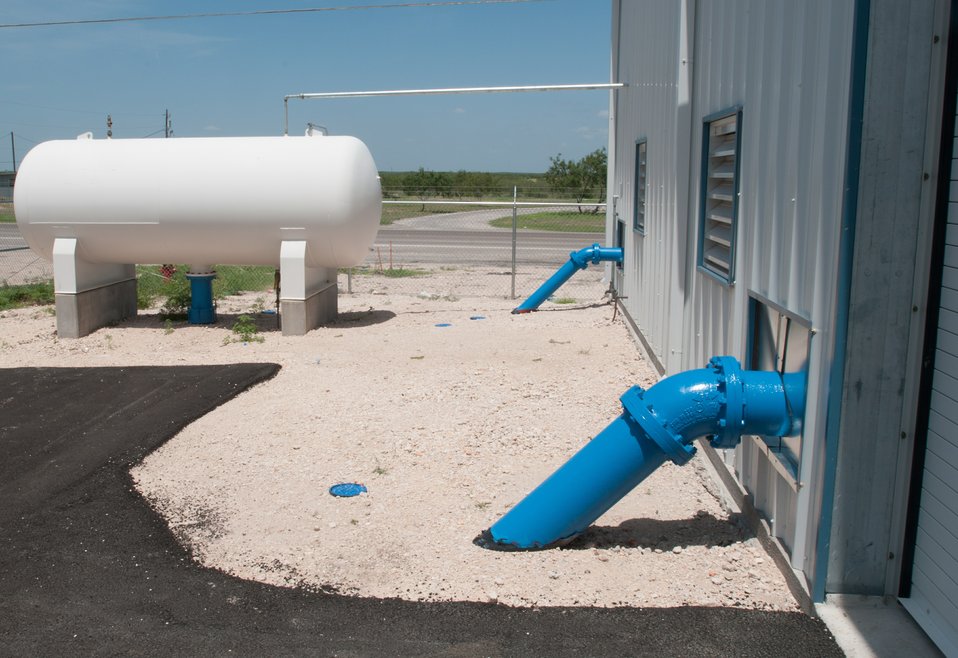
Blue inlet pipes bring water from remote wells and river sources, and from unprocessed reservoir tank into into the Freer Water Control and Improvement District (WCID) Arsenic Removal System facility, in Freer, TX, on Tuesday, June 18, 2013. Freer Water Control and Improvement District (FWCID) benefits from the financial assistance of the U.S. Department of Agriculture (USDA) Rural Development (RD) to complete a two-phase approach to meeting the city’s water supply and safety needs, on Tuesday, June 18, 2013. Although, the naturally occurring arsenic levels have remained constant for more than a century, the Environmental Protection Agency (EPA) safe level standards have established lower levels of arsenic to be safe for human consumption. To meet those levels FWCID approached USDA and was awarded a $986,000 loan for Phase I, to install two new water wells, each rated at 167 gallons per minute (creating a total of eight wells); 13,600 feet of well collection lines; and 15,000 linear feet of well control line to remotely control the well pumps and the 1,000,000 gallon holding tank at the well facility, which supplies water to the new Arsenic Removal System (Phase II). Previously, water was manually controlled by personnel who knew when and how long to manually opened and closed water valves or started well pumps to ensure holding tank levels were within operating levels during peek and slack times of the day. Phase II was a combination of a $1,832,000 loan and a $1,258,750 grant, which provided for the customized arsenic removal system, seen in these photos. The system includes a new 3,530 sp. ft. facility, on a .76-acre site, and houses the operations room, computer and power system, laboratory room, and pump systems. The entire operation can be monitored through a desktop computer interface system. The computer-controlled system ensures raw water is fed to the arsenic removal pump system, which works in sequence to maintain a constant pressure, when needed, to pump water through (blue) arsenic removal absorber vessels, and into ground storage tanks that feeds the residential and commercial needs of the city. Samples of water are periodically tested; and so far the arsenic levels have been below 1 part per billion (PPB), well under the 10 PPB limit.